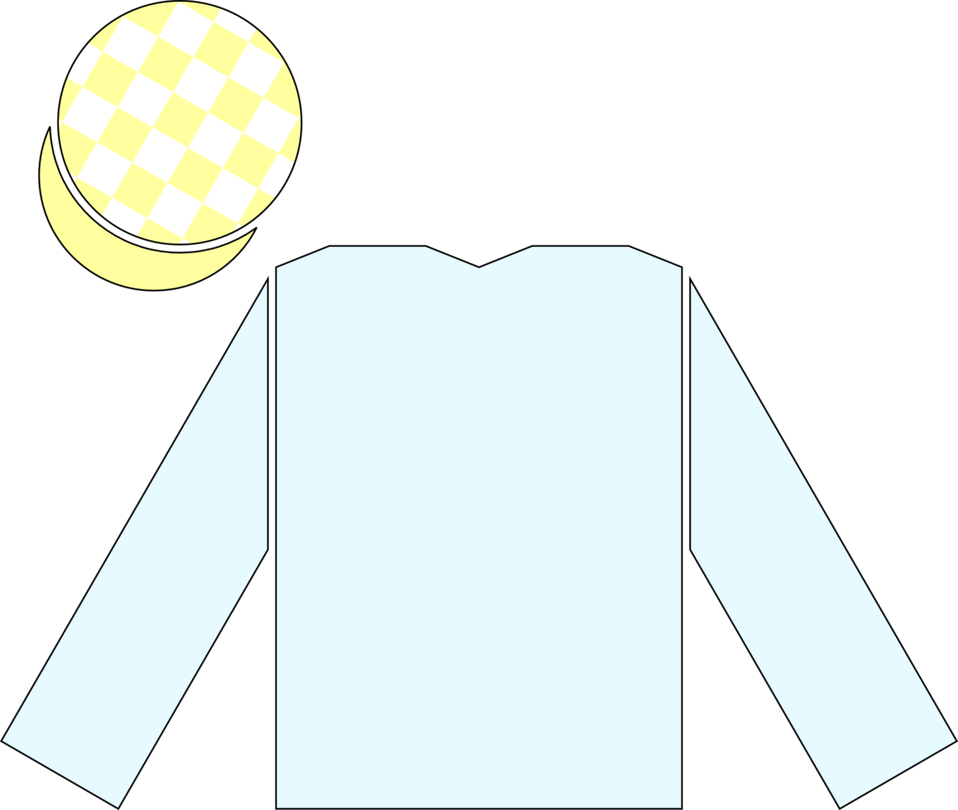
The en:racing silks of Ballymacoll Stud, as worn by the jockey of en:North Light to victory in the en:2004 Epsom Derby.